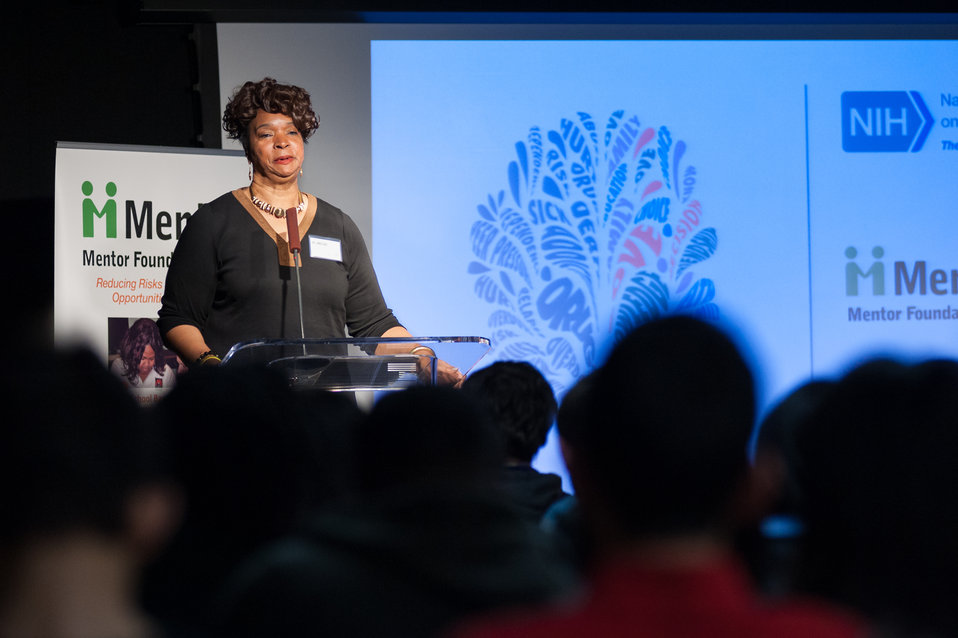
Mentor NDFW Event 2014

Mentor Foundation USA, in partnership with the National Institute on Drug Abuse (NIDA) and other key partners hosted a Youth Drug Facts Rally at the House of Sweden on Thursday, 30th January 2014. Guest Speaker Dr. Lonise Bias presented to approximately 200 students from five local high schools attended and had the opportunity to interact with top U.S. scientific experts and inspiring guest speakers to “shatter the myths” about drugs and substance abuse, while pledging to stay drug-free.